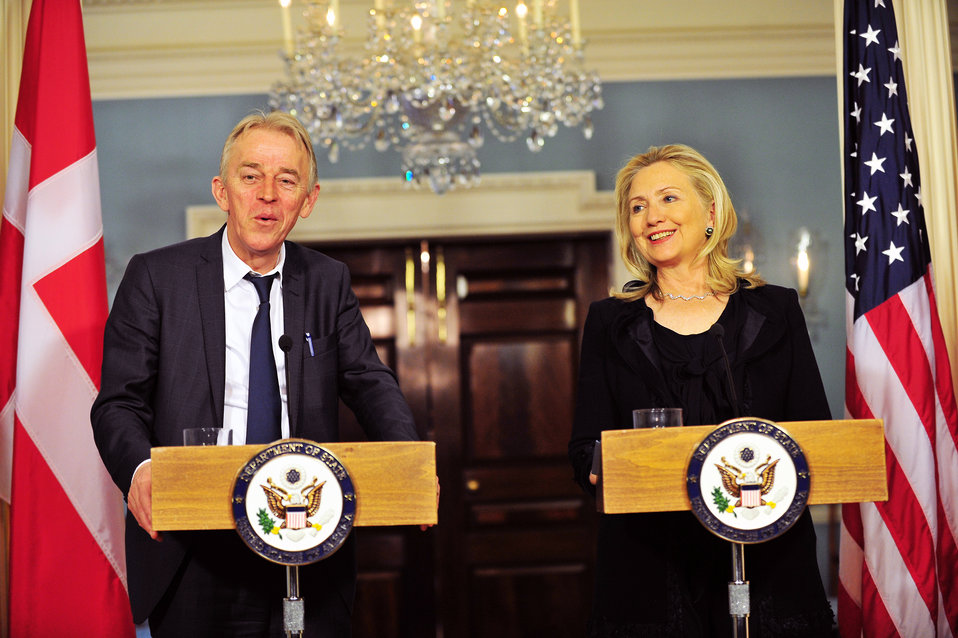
Secretary Clinton and Danish Foreign Minister Sovndal Hold a Joint Press Conference

U.S. Secretary of State Hillary Rodham Clinton and Danish Foreign Minister Villy Sovndal hold a joint press conference after their bilateral meeting at the U.S. Department of State in Washington, D.C., on December 15, 2011.